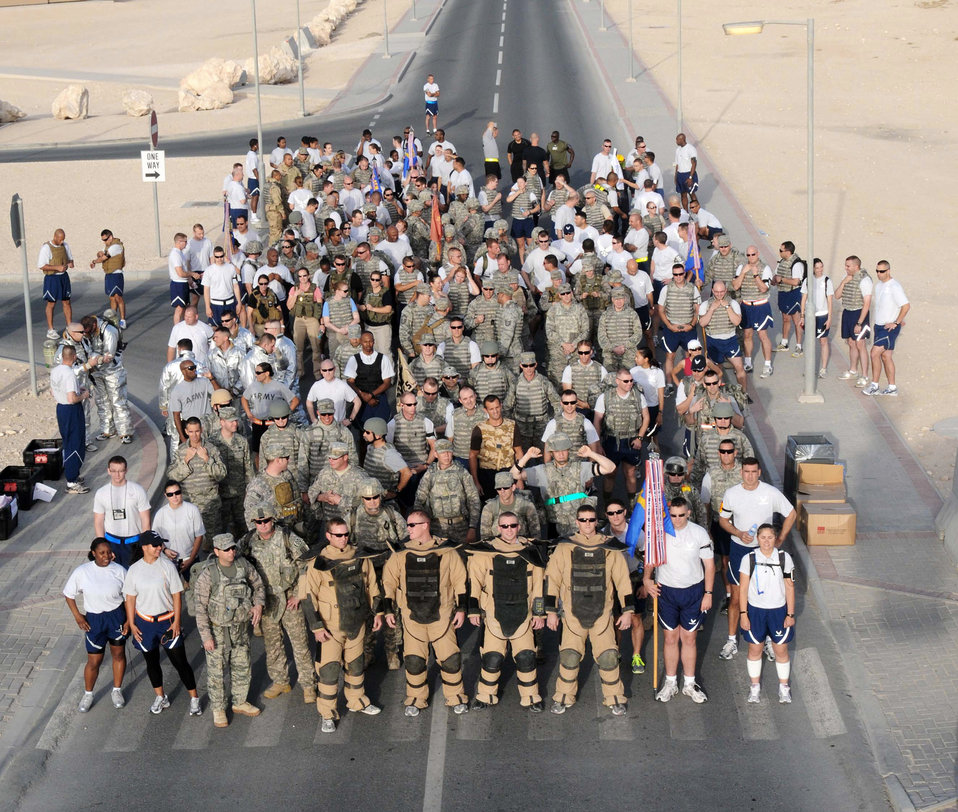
Airmen run to honor EOD fallen, injured

U.S. service members line up prior to the start of the 5 km run hosted by the 379th Expeditionary Civil Engineering Squadron Explosive Ordnance Disposal team May 7, 2011, at an airbase in Southwest Asia. Many service members came to participate or cheer on the runners.